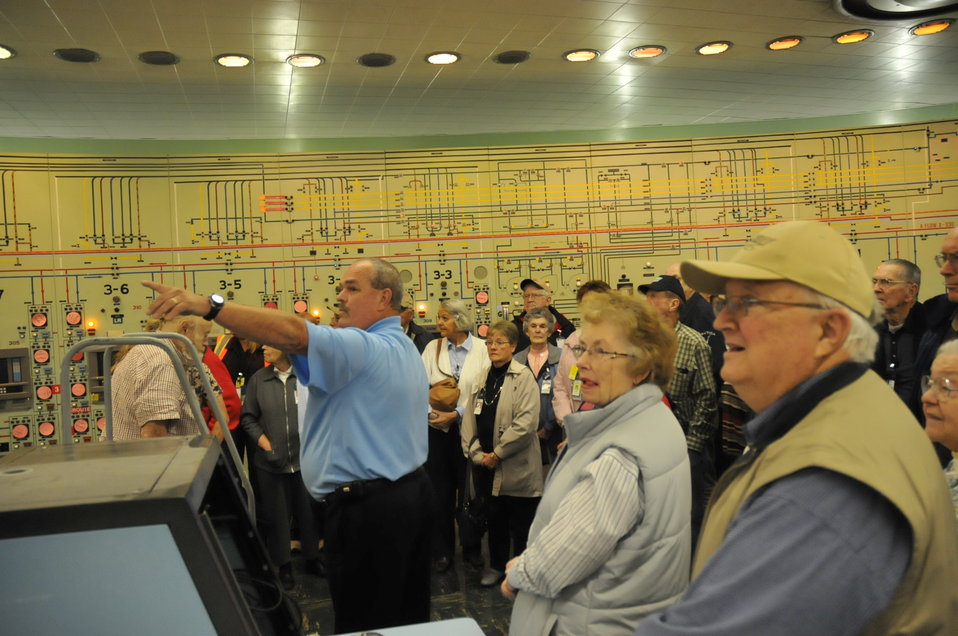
Site Tours at Portsmouth Offer Public Lessons on Shuttered Facility’s History

Residents of the Bristol Village retirement community receive an overview of the Portsmouth Gaseous Diffusion Plant’s control facility, the hub of the plant.